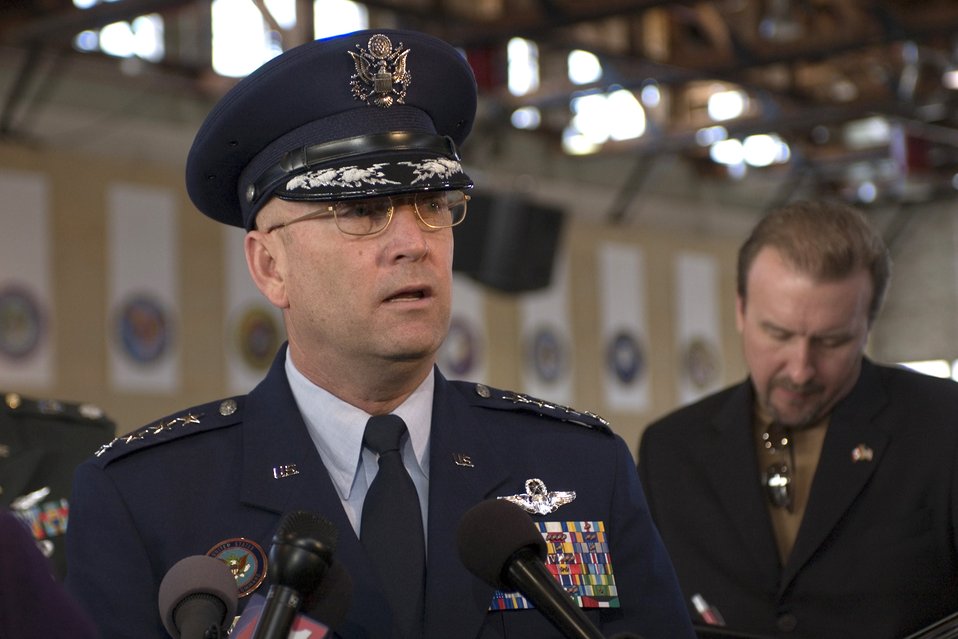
New commander

Gen. Victor E. Renuart Jr. talks with reporters for the first time as commander of North American Aerospace Defense Command and U.S. Northern Command at a press conference March 23 at Peterson Air Force Base, Colo.